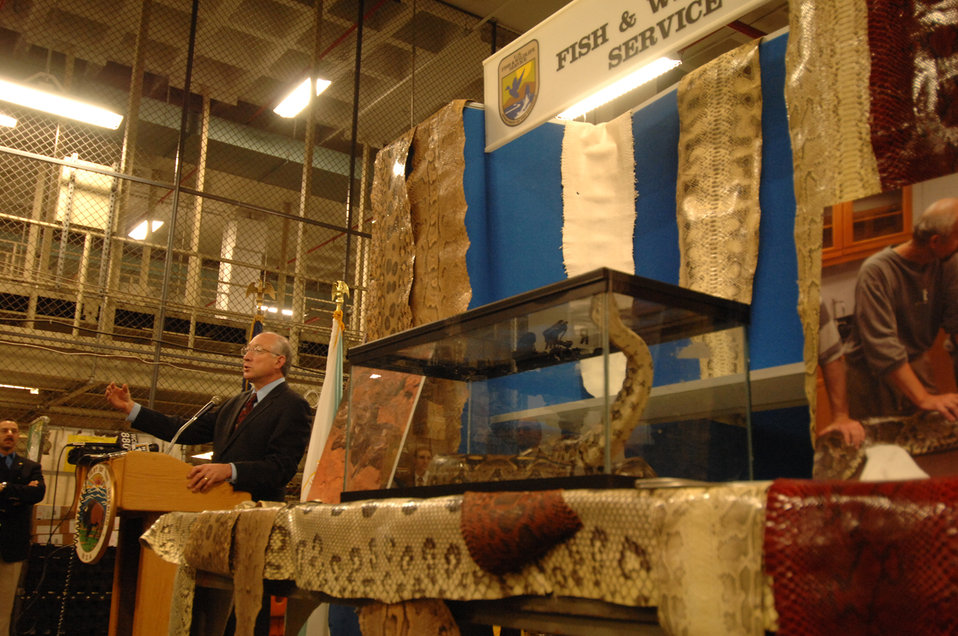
Secretary Salazar giving his speech

On January 20, Secretary of the Interior Ken Salazar visited the Port of New York to announce that the U.S. Fish and Wildlife Service will propose to list the Burmese python and eight other large constrictor snakes that threaten the Everglades and other sensitive ecosystems as “injurious wildlife” under the Lacey Act.